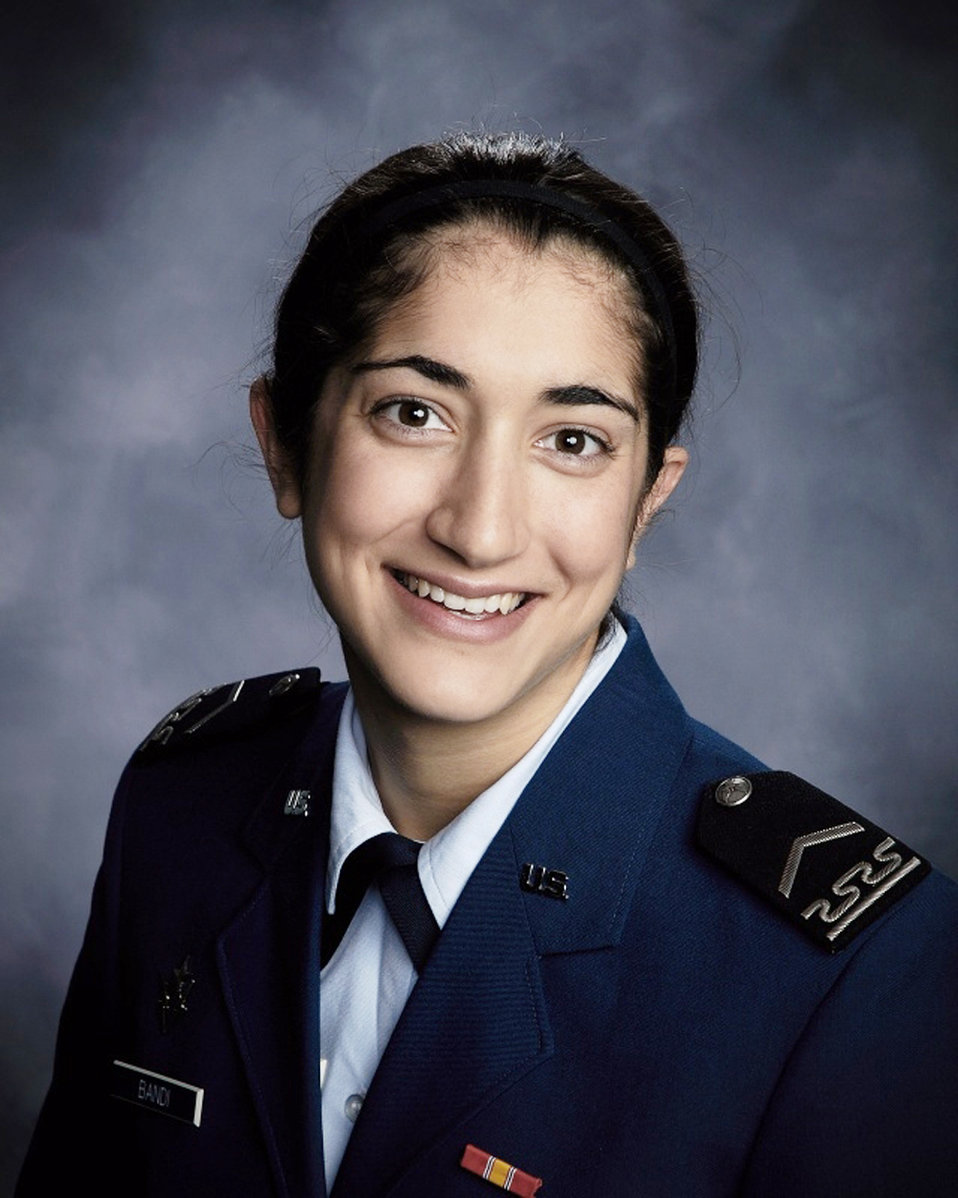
Academy cadet named Truman Scholar

U.S. Air Force Academy Cadet 2nd Class Jennifer Bandi, shown here in her sophomore yearbook photo, was selected as one of 60 Truman Scholarship recipients March 30, 2010. Cadet Bandi, a native of Winchester, Mass., is the Academy's 16th Truman Scholar.